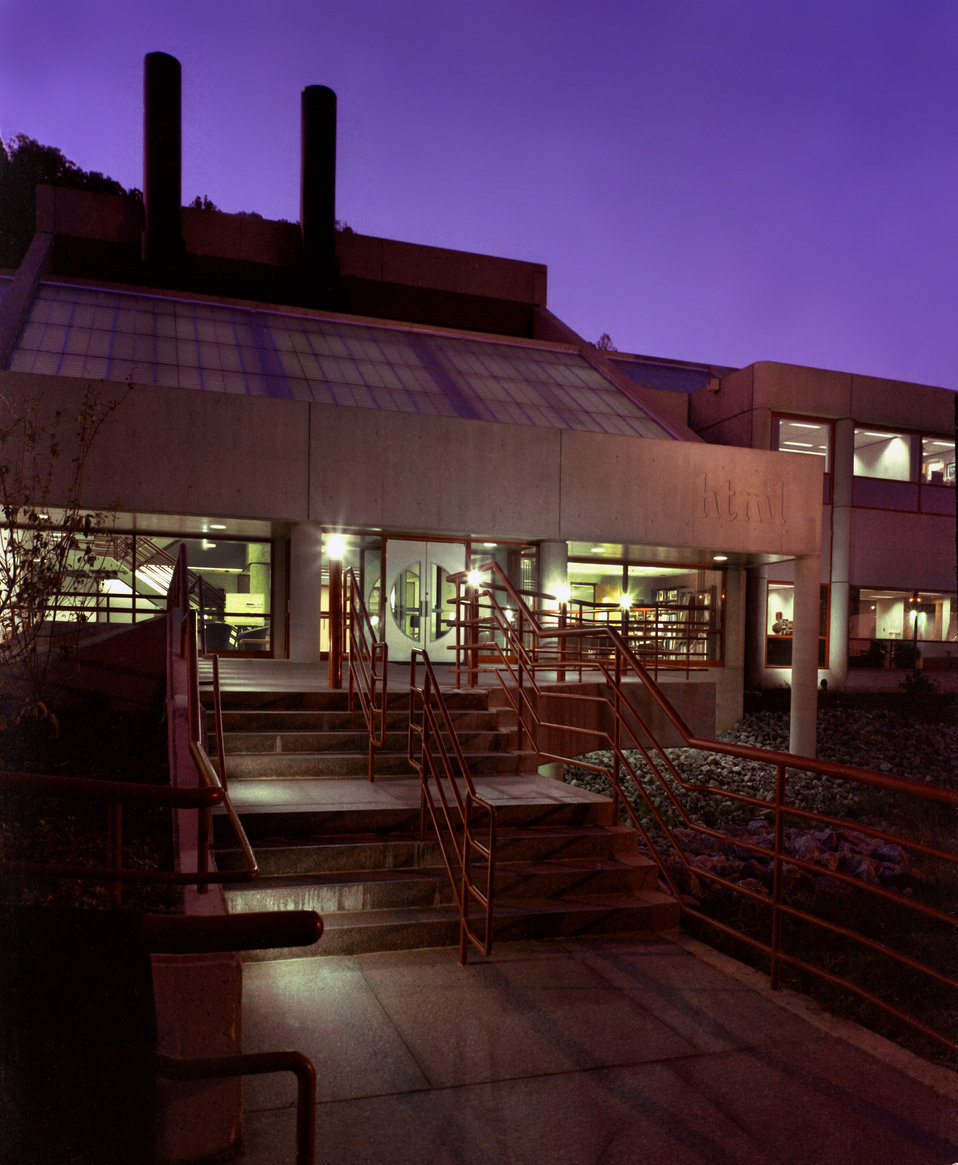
High Temperature Materials Laboratory at Oak Ridge National Lab

YP204591 DOE photo by Lynn Freeny

High Temperature Materials Laboratory at Oak Ridge National Lab 10-13-1987